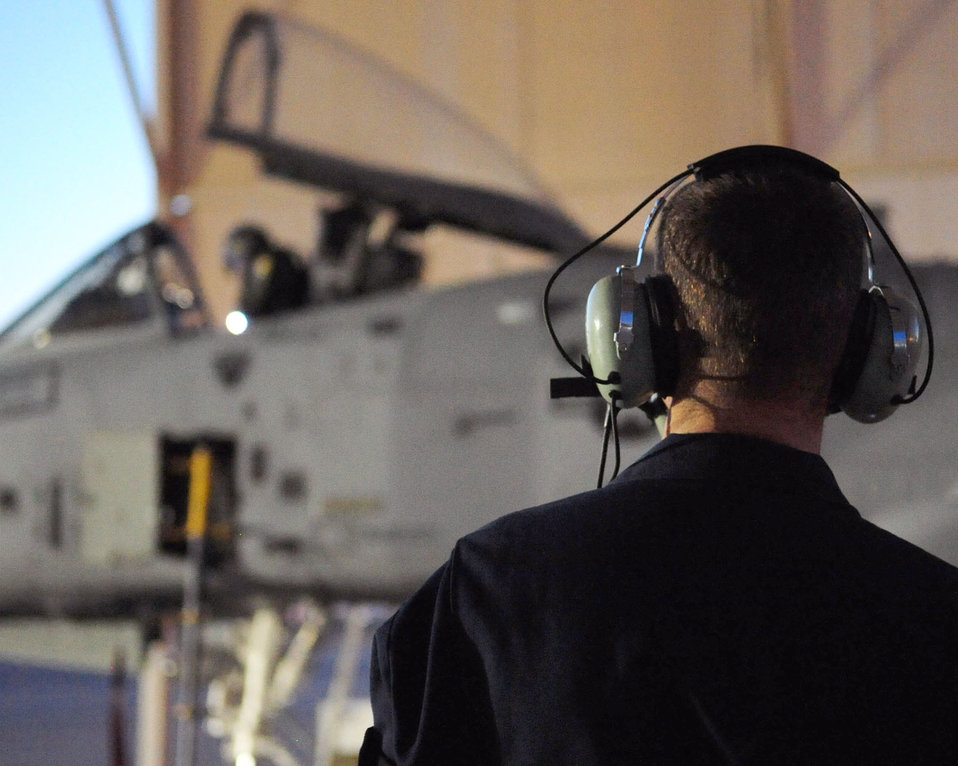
A-10 qualification

Airman 1st Class Jeff Gronemyer, an A-10C Thunderbolt II crew chief from the 355th Aircraft Maintenance Squadron at Davis-Monthan Air Force Base, Ariz., stands by as 1st Lt. Dan Griffin performs his final operations check prior to departing for a mission June 23, 2010. This was the second of eight night flights for Lieutenant Griffin, who is currently a student in the A-10C Pilot Initial Qualification course. As part of the A-10C Pilot Initial Qualification course curriculum, he needed to learn how to execute night flying missions. He will accomplish this through six hours of academic classes, five hours in the A-10 flight simulator and eight training flights.